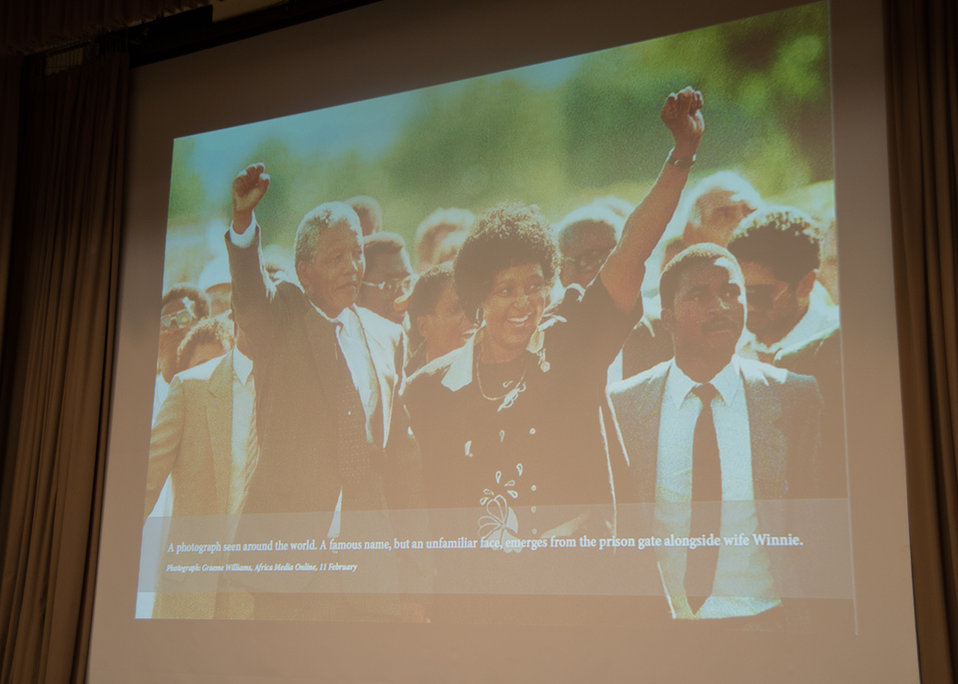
U.S. Department of Agriculture's (USDA) Dr. Martin Luther King Jr. and National Service Day offers a tribute to the late Nelson Mandela in Washington, D.C. on Wednesday, Jan. 15, 2014.